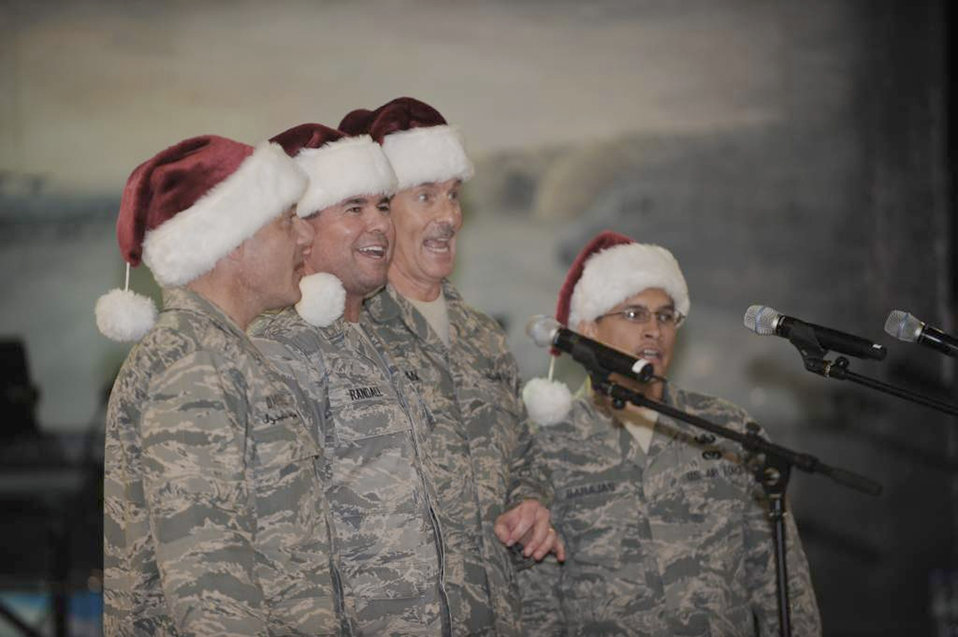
Barbershop quartet creates 'buzz'

The